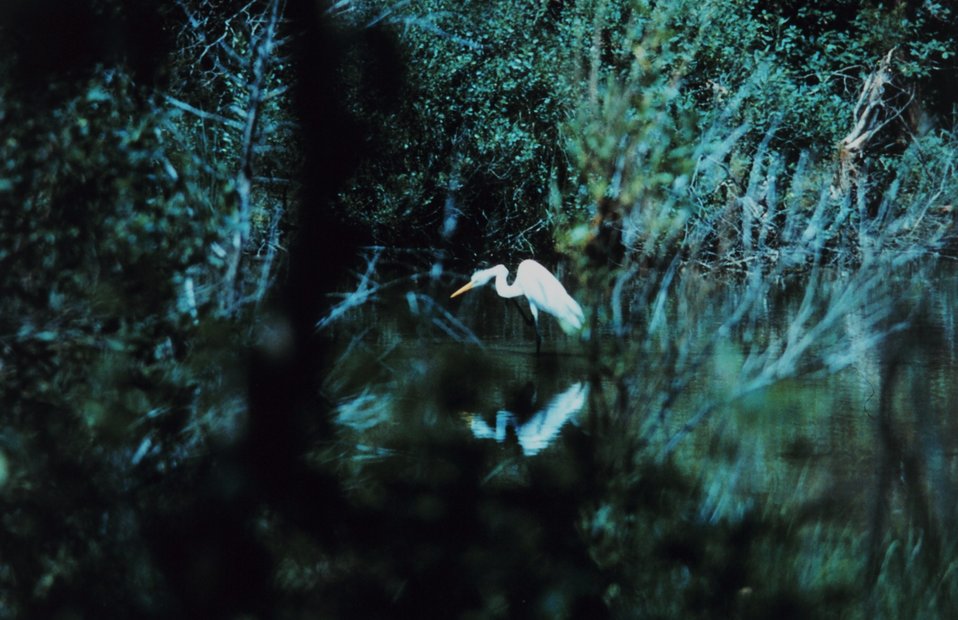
An egret fishing in a tidal pond